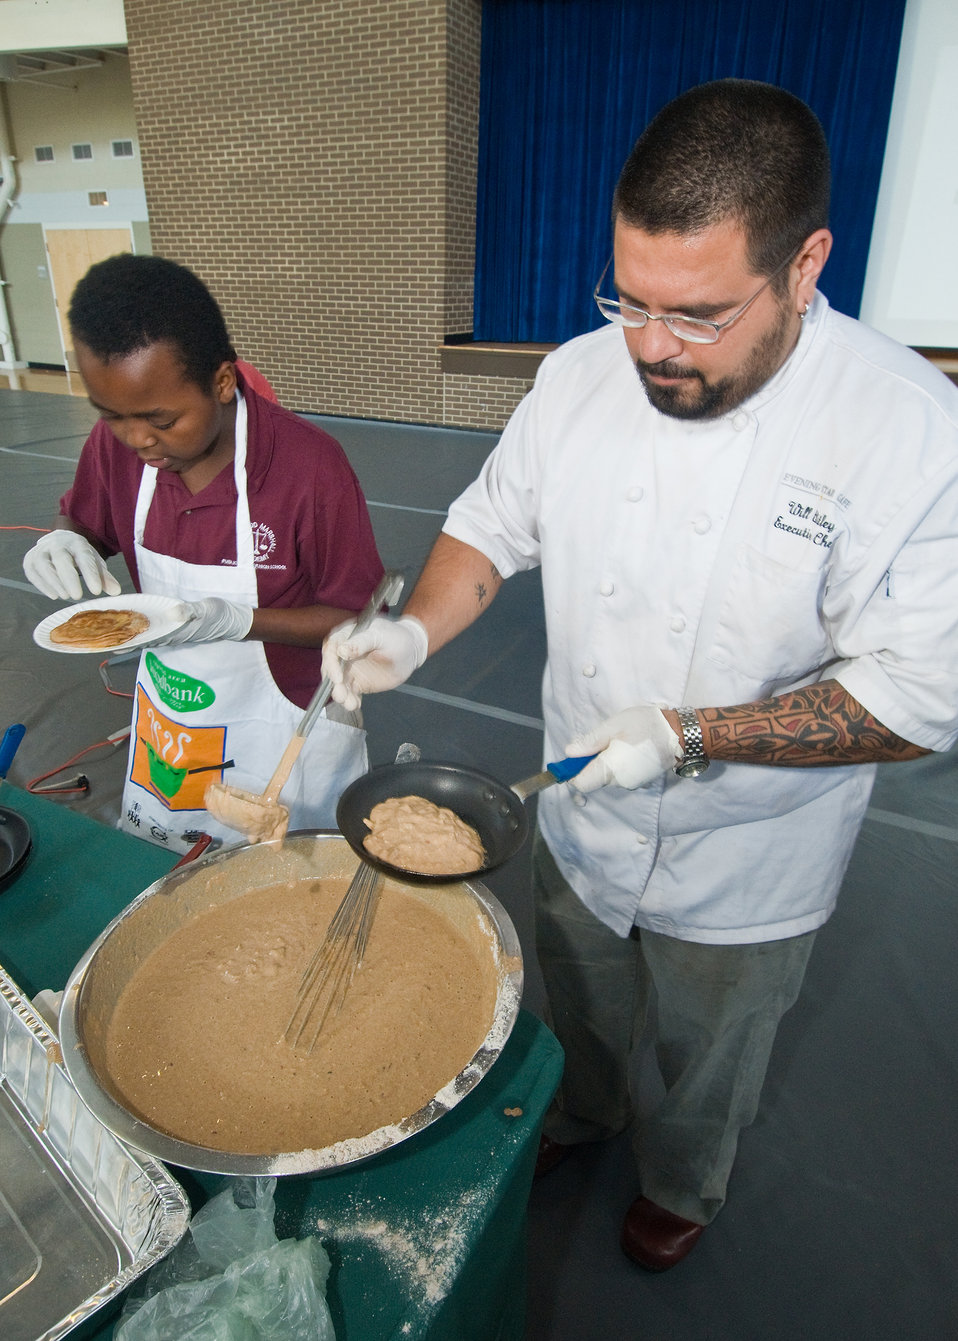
Darvel Suggs (left), a sophomore at Thurgood Marshall Academy and Chef Will Artley (right), 'Evening Star Cafe' prepare, 'Apple Raisin Flap Jacks with Apple Syrup' for the Chef Competition of the D.C. Farm to School and D.C. School Garden Week at the Savoy Elementary and Thurgood Marshall Academy shared campus in Washington, DC, Tuesday, October 12, 2010. At the event related to the Iron Chef competition local chef’s and student sous chef’s created healthy, delicious recipes using local apple varieties to be judged by the students themselves. School children and a partnership of community organizations have responded to First Lady Michelle Obama’s goal to end childhood obesity by building school gardens, providing healthier foods in school meals, and helping kids connect with local food and agriculture. USDA Photo 10di1522-53 by Bob Nichols.